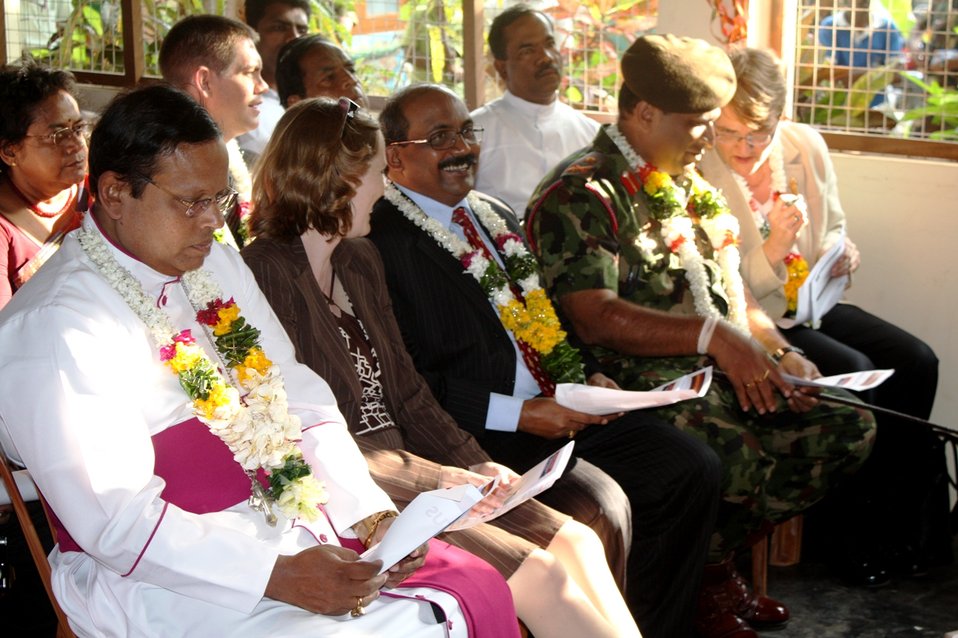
Audience Members Listen to Ambassador Butenis' Remarks

Members of the audience listen as U.S. Ambassador to Sri Lanka and Maldives Patricia A. Butenis delivers remarks at the opening of the American Corner Jaffna in Colombo, Sri Lanka, on January 24, 2011.